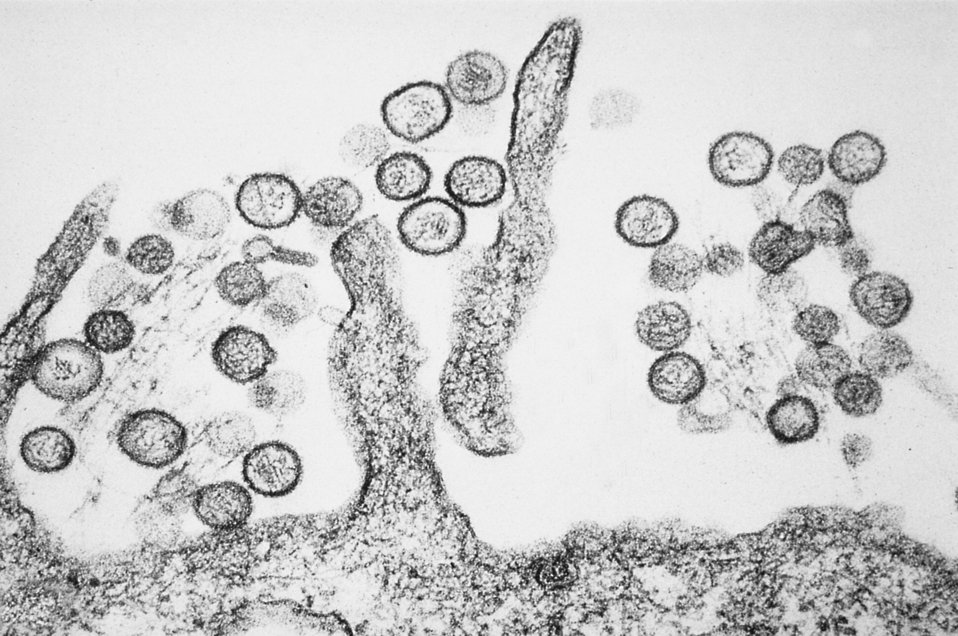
Transmission electron micrograph of the Sin Nombre Hantavirus.